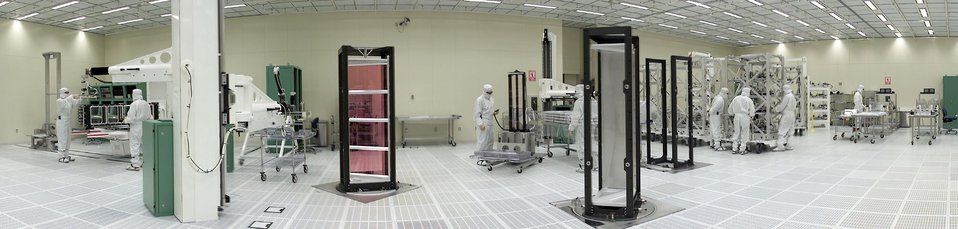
NIF'S OPTICS ASSEMBLY BUILDING WITH THE LASER GLASS LINE REPLACEABLE UNIT IN CENTER.

THE NATIONAL IGNITION FACILITY AT LLNL ENABLES KEY PROGRAMS AND TECHNOLOGIES THAT SUPPORT DOE'S NATIONAL NUCLEAR SECURITY ADMINISTRATION DEFENSE PROGRAMS AND LLNL MISSIONS, ENSURING THAT THE NATION'S NUCLEAR WEAPONS REMAIN SAFE, SECURE AND RELIABLE. NIF, ONE OF THE CORNERSTONES OF DOE'S STOCKPILE STEWARDSHIP PROGRAM, WILL INTEGRATE THE INERTIAL CONFINEMENT FUSION PROGRAM INTO THE OVERALL STOCKPILE STEWARDSHIP PROGRAM AND FOSTER THE DEVELOPMENT OF ASSOCIATED LASER TECHNOLOGIES.